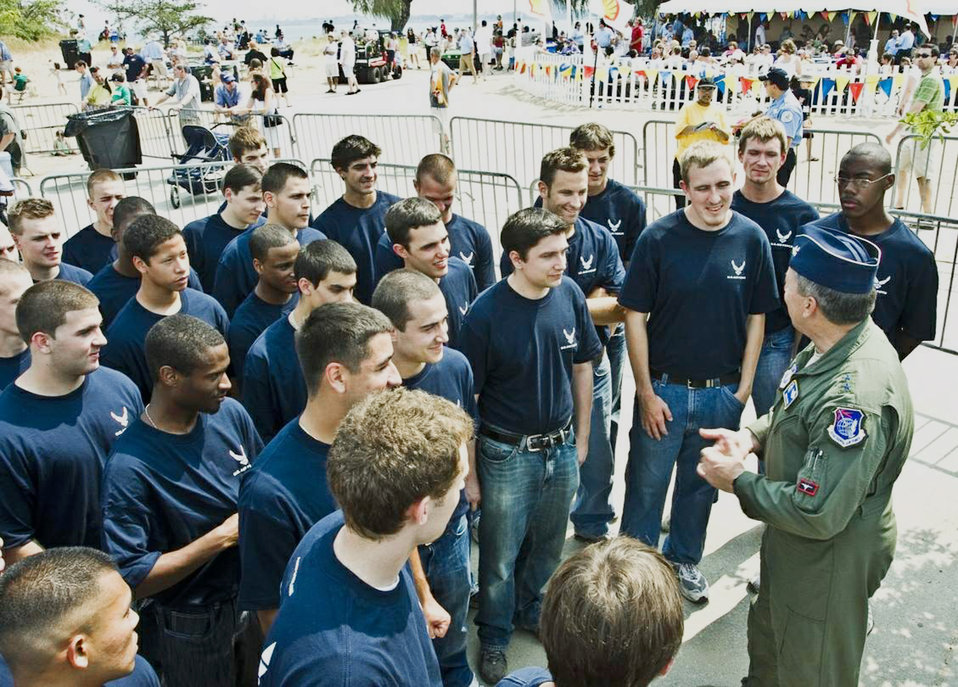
New recruits enlist at Chicago Air and Water Show

Recruits from the Chicago area listen as Maj. Gen. Gregory Feest, commander of Air Education and Training Command's 19th Air Force at Randolph Air Force Base, Texas, gives tips on achieving success in the Air Force. Following the chat, General Feest conducted the oath of enlistment ceremony with the recruits on the Chicago lakefront Aug 15 in front of thousands of spectators attending the 51st Chicago Air and Water Show.